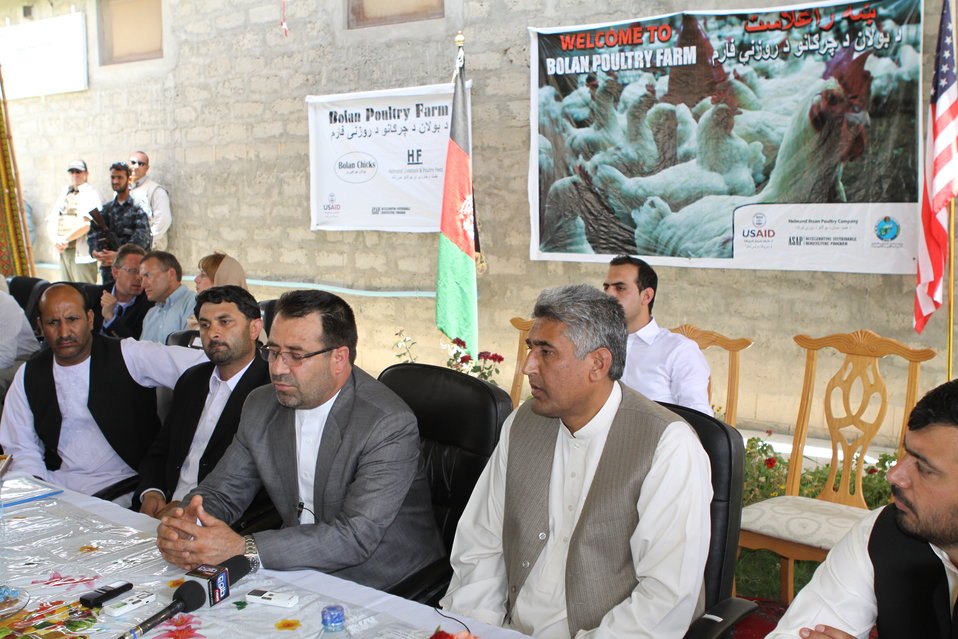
Bolan Poultry Farm